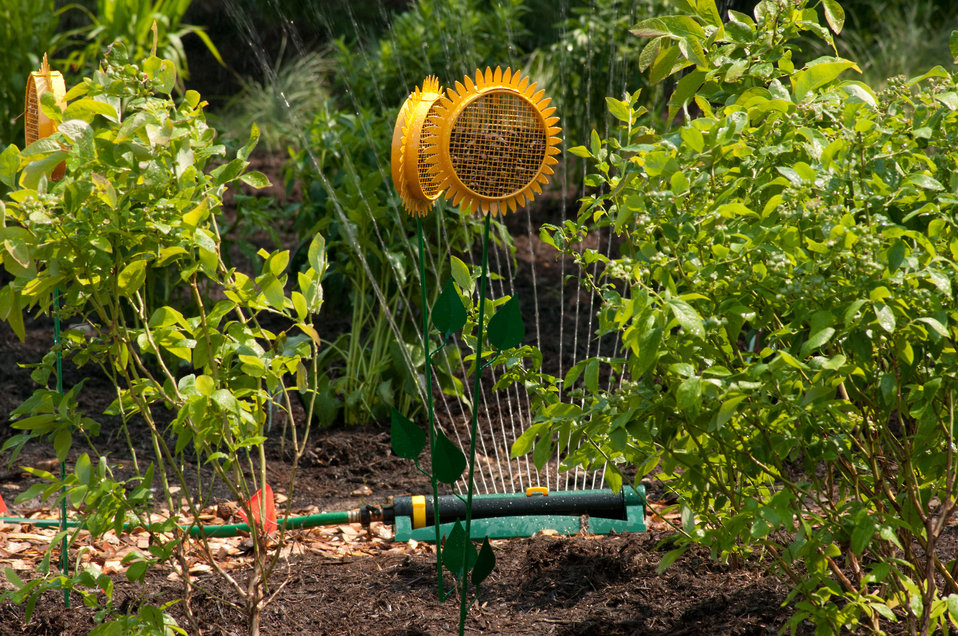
The completed portion of the People’s Garden at William B. Powell Elementary School is given it’s first watering on Thursday, June 9, 2011 in Washington, DC. Volunteers from U.S. Department of Agriculture People’s Garden Executive Master Gardener program and Washington Capitals hockey organization, along with defenseman Jeff Schultz, and mascot Slapshot transformed a grassy corner of the Powell Elementary School playground into a habitat garden and outdoor learning area. The 100 degree heat index and harder than expected soil, contributed to only 60% of the planned projects being completed. The completed projects included a walking path; tiling of garden plots; planting a monarch butterfly watch garden; caterpillar and butterfly plaques; hummingbird and bat houses, and tool shed. The garden will later include a picnic area, outdoor classroom, hummingbird garden, bird habitat, and native bee garden, and birdbath. Executive Master Gardeners led the volunteer project teams. USDA challenges its employees to establish People's Gardens at USDA facilities worldwide or on this case, help communities create gardens. People's Gardens vary in size and type, but all have a common purpose - to help the community and the environment.